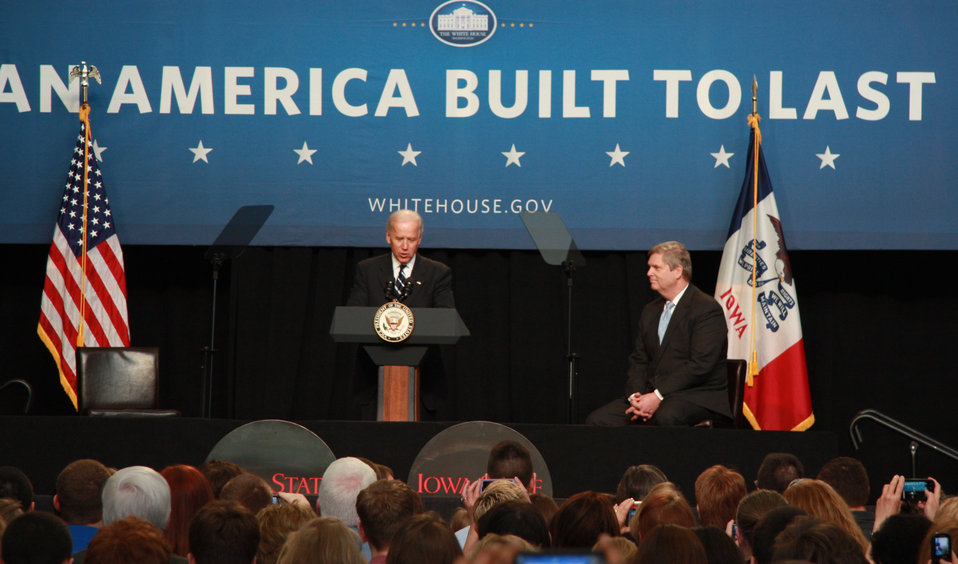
Agriculture Secretary Tom Vilsack and Vice President Joe Biden spoke to a large gathering of students and faculty about the important role manufacturing has in the future success of our country at An America Built to Last event at Iowa State University on Thursday, March 1, 2012 in Ames, IA.